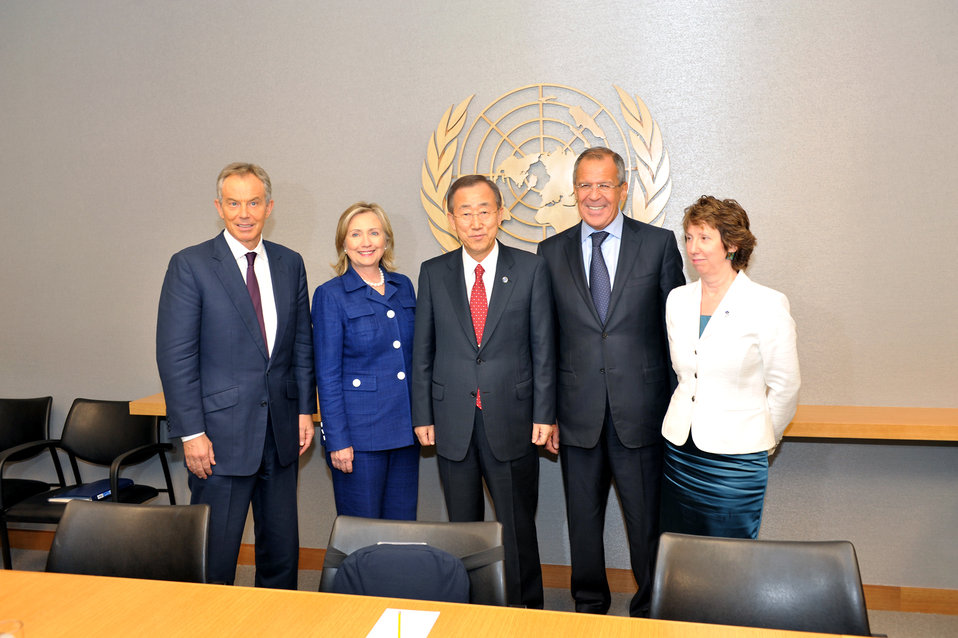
Secretary Clinton Poses for a Photo With the Quartet

U.S. Secretary of State Hillary Rodham Clinton (second from left) poses for a photo with the Quartet, including Quartet Representative Tony Blair (left), UN Secretary General Ban Ki-Moon (center), Russian Foreign Minister Sergey Lavrov (fourth from left), and EU High Representative Catherine Ashton in the Secretary General's Conference Room at the United Nations in New York, New York, on September 21, 2010.